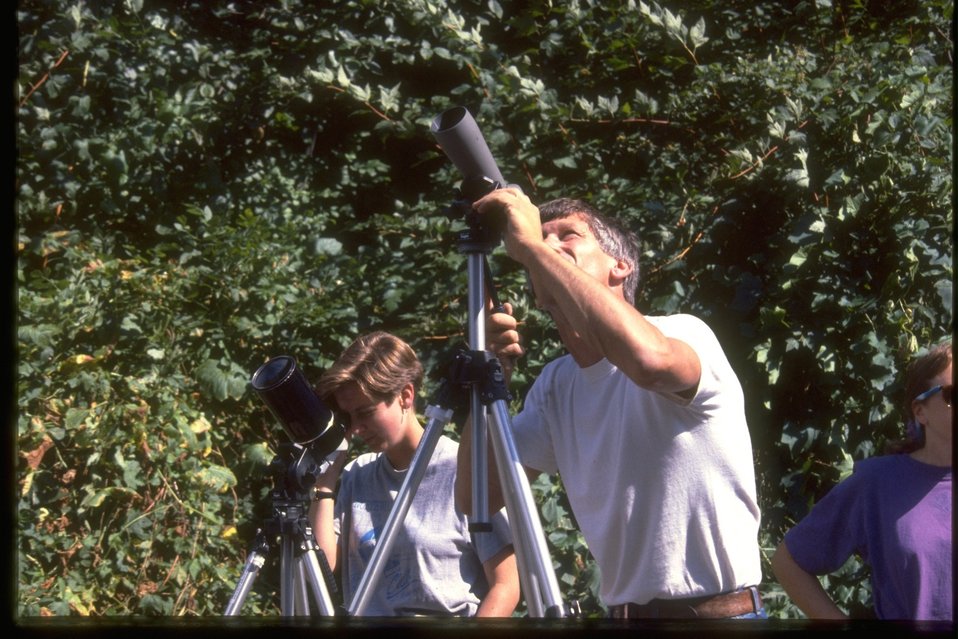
Wildlife biologists look for Marble Murlets.